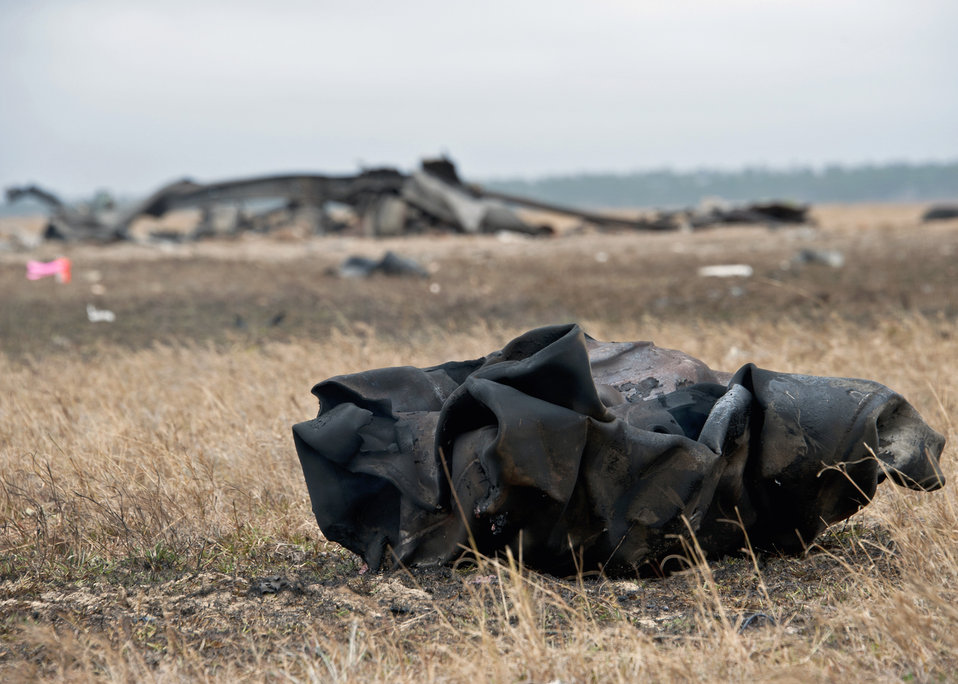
FBI training at Eglin

A charred piece of metal from the engine of a box truck was blasted away from the vehicle when it was detonated on the range Nov. 30, 2010, at Eglin Air Force Base, Fla. The detonation created a simulated crime scene for the FBI's Large Vehicle Post-Blast School. State and local law enforcement agencies, as well as Marine and Air Force explosive ordnance disposal technicians, attended the week-long class.